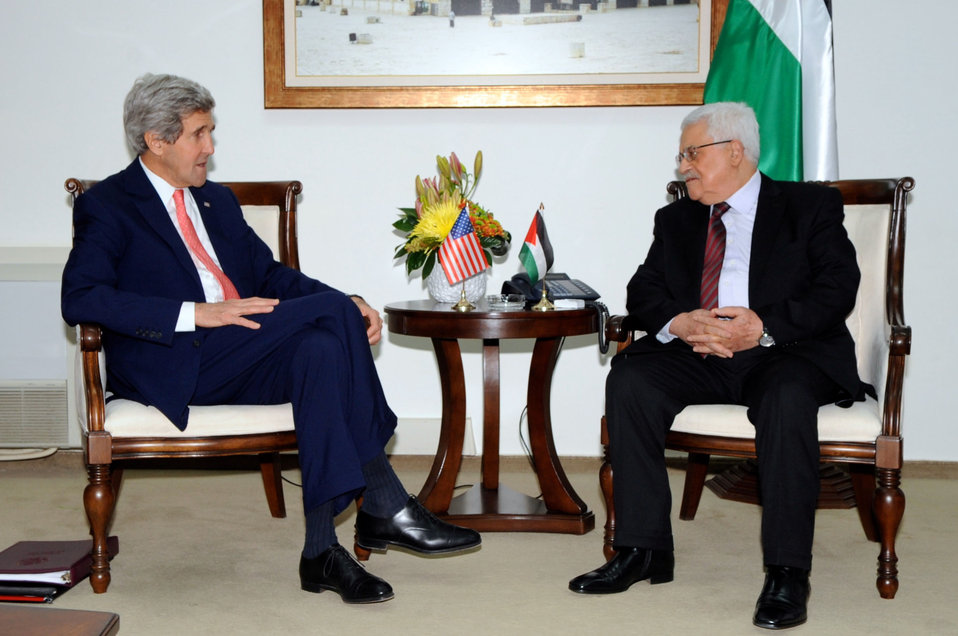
Secretary Kerry Meets With Palestinian Authority President Abbas in the West Bank

U.S. Secretary of State John Kerry sits with Palestinian Authority President Mahmoud Abbas before a meeting focused on Middle East peace issues in Ramallah, West Bank, on January 3, 2014.